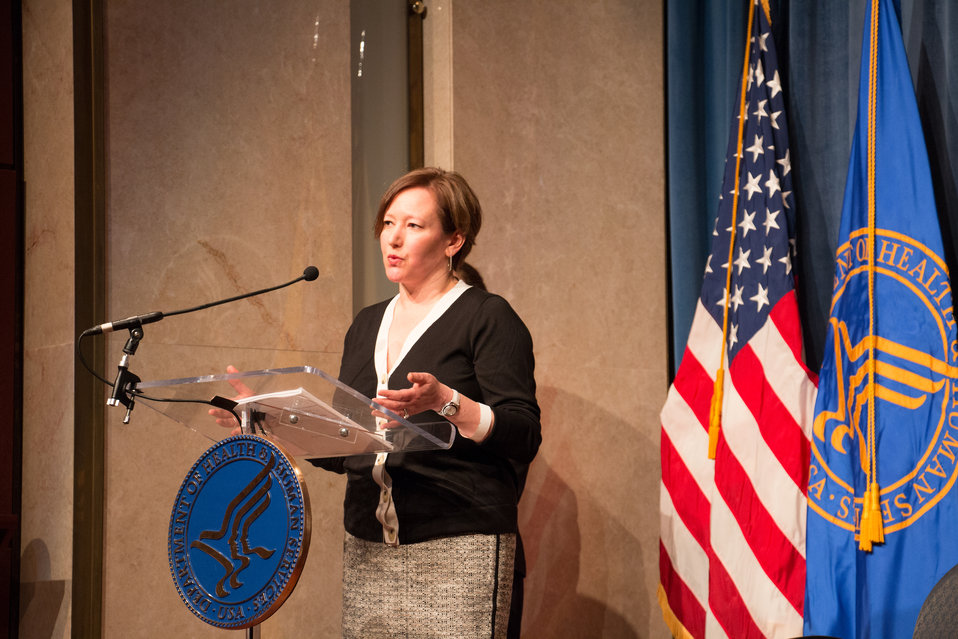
VHAP Launch (256 of 511)